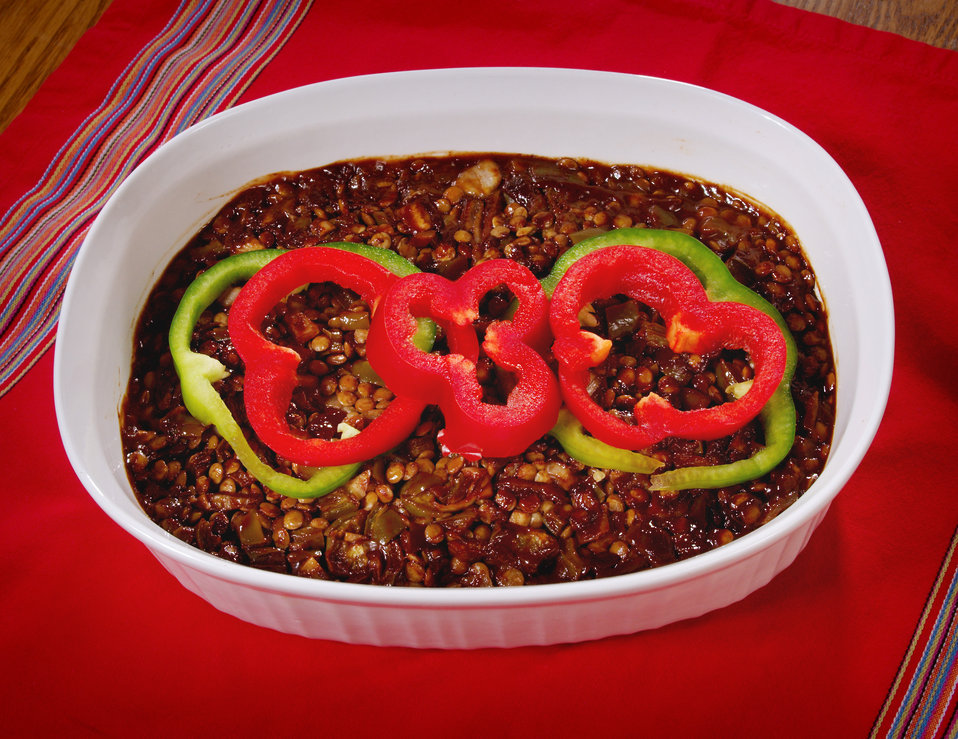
This casserole dish contained a freshly-prepared BBQ Lentils dish, the recipe for which is provided through the link below. Ingredients included dry lentils, barbeque sauce, green and red peppers, onions, and garlic.